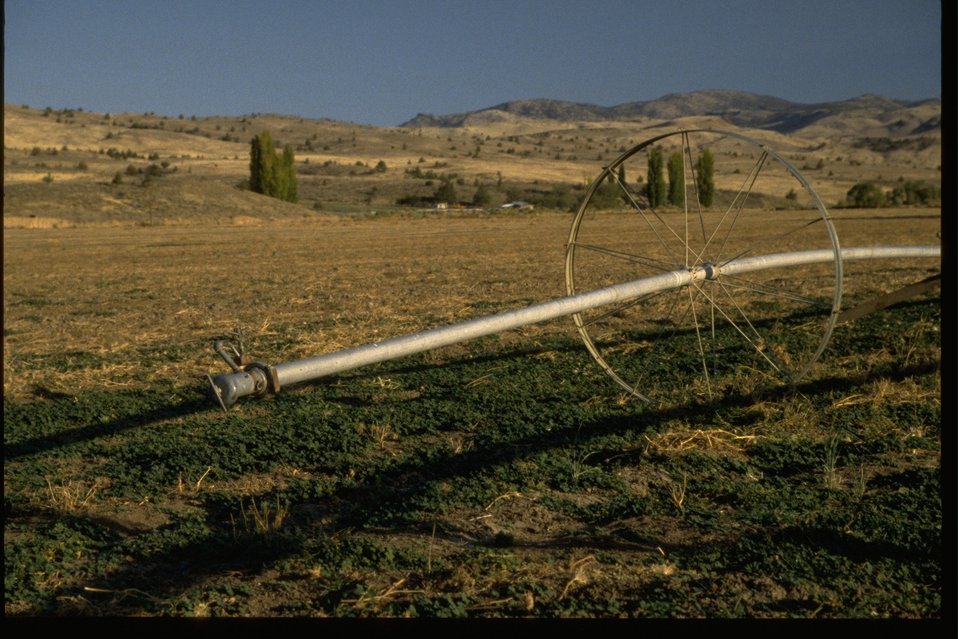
Clarno BLM agriculture field with irrigation sprinkler along the John Day River.